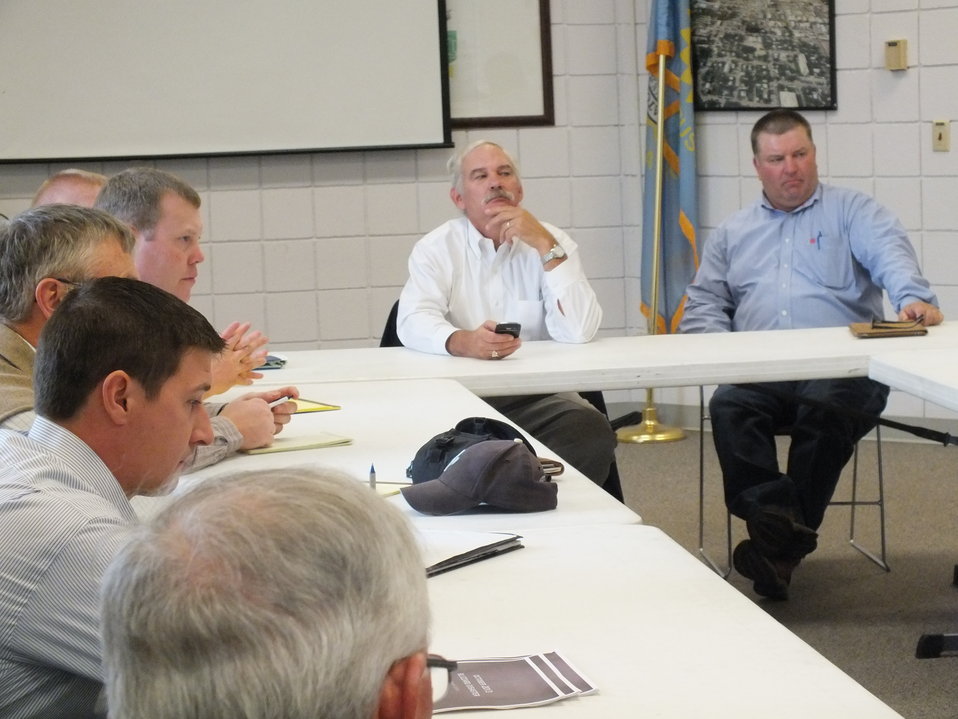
Agriculture Under Secretary for Farm and Foreign Agricultural Services (FFAS) Michael Scuse, Farm Service Agency (FSA) representatives, Natural Resources Conservation Service (NRCS) County, and State officials meet with producers after they viewed the burial pit of cattle that perished in the Atlas Blizzard. The burial pit was approximately 20-25 feet wide and 100 feet long. There were nearly 200 carcasses already in the pit, with many more to come as soil wetness conditions improve in areas that are still inaccessible by conventional methods.